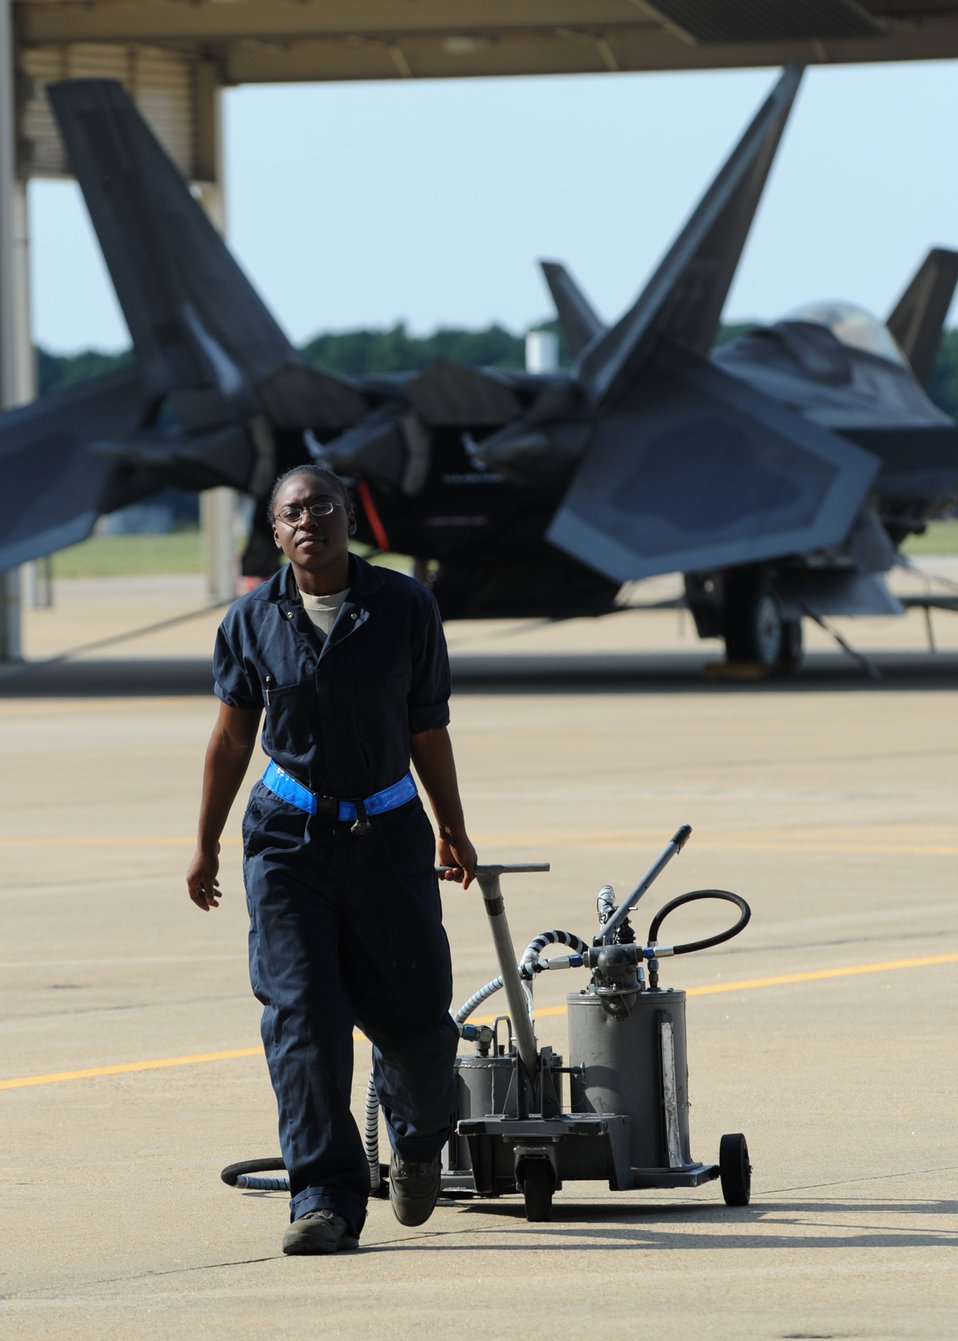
Pulling oil on the flightline

Airman Kimara Duncan pulls an oil cart across the flight line during routine maintenance on an F-22 Raptor at Langley Air Force Base, Va., Sept. 25, 2012. As a young Airman just starting technical training, Duncan, a 94th Aircraft Maintenance Unit tactile aircraft maintainer, was excited to learn she would be trained to work on the most technologically advanced fighter jet in the world.